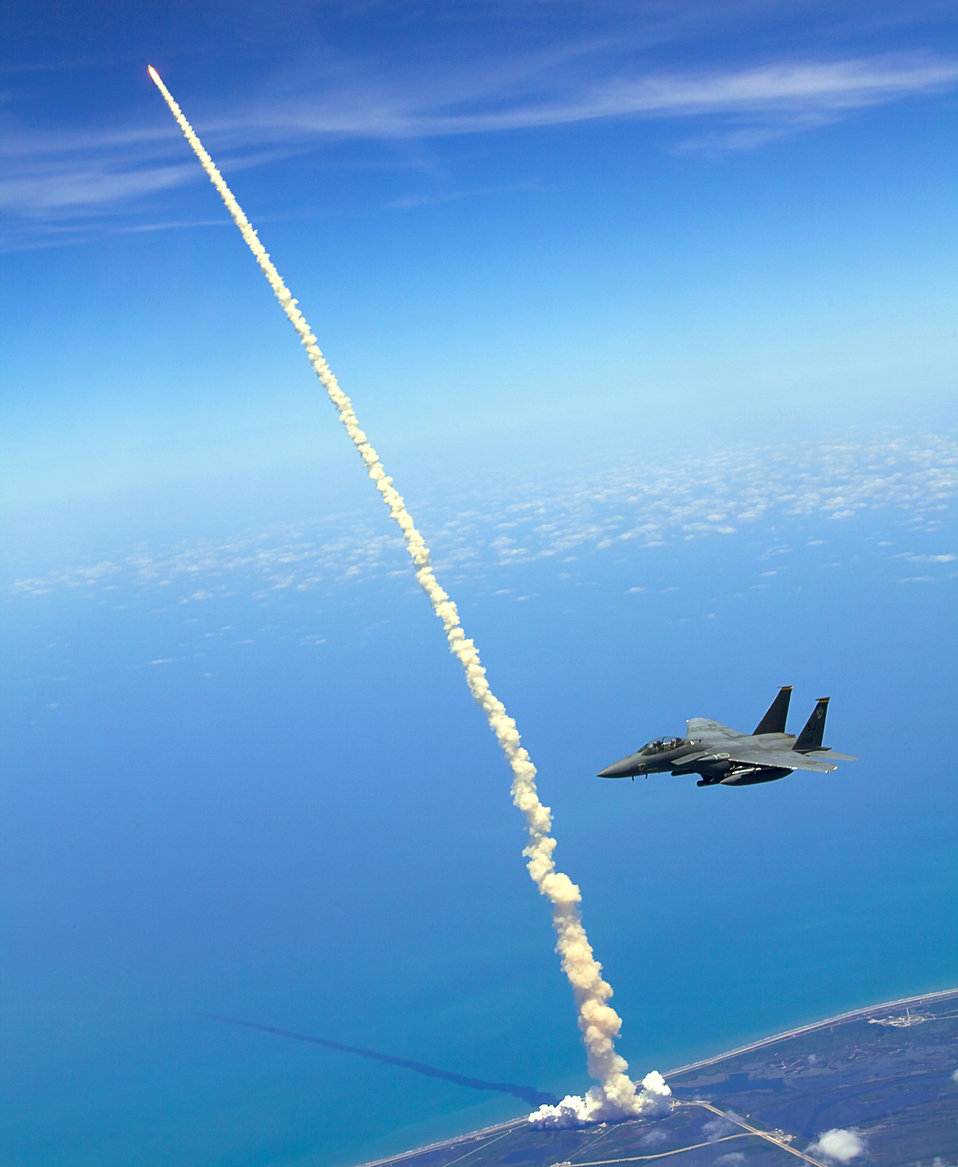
4th FW Strike Eagles assist shuttle launch

Lt. Col. Gabriel Green and Capt. Zachary Bartoe patrol the airspace in an F-15E Strike Eagle as the Space Shuttle Atlantis launches May 14, 2010, at Kennedy Space Center, Fla. Colonel Green is the 333rd Fighter Squadron commander and Captain Bartoe is a 333rd FS weapons system officer. Both aircrew members are assigned to Seymour Johnson Air Force Base, N.C.